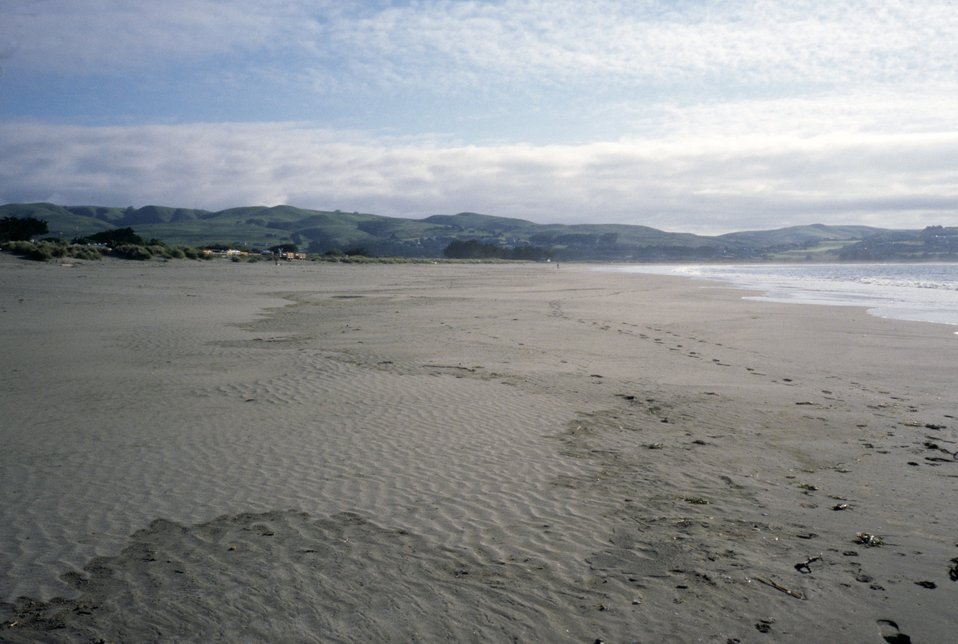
Doran Beach